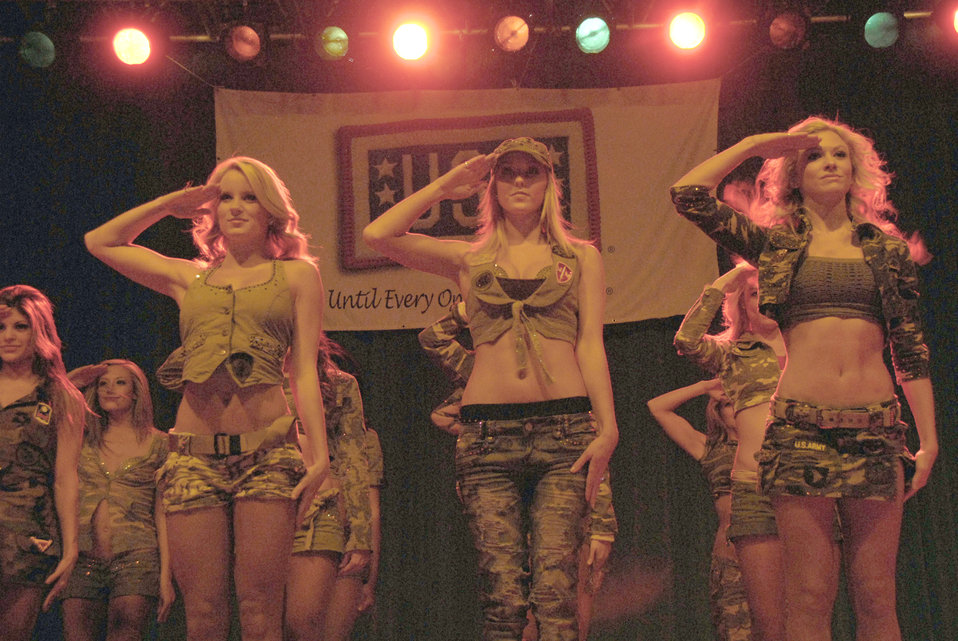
Dallas Cowboys cheerleaders perform Dec. 29, 2010, during a visit to Osan Air Base, South Korea.